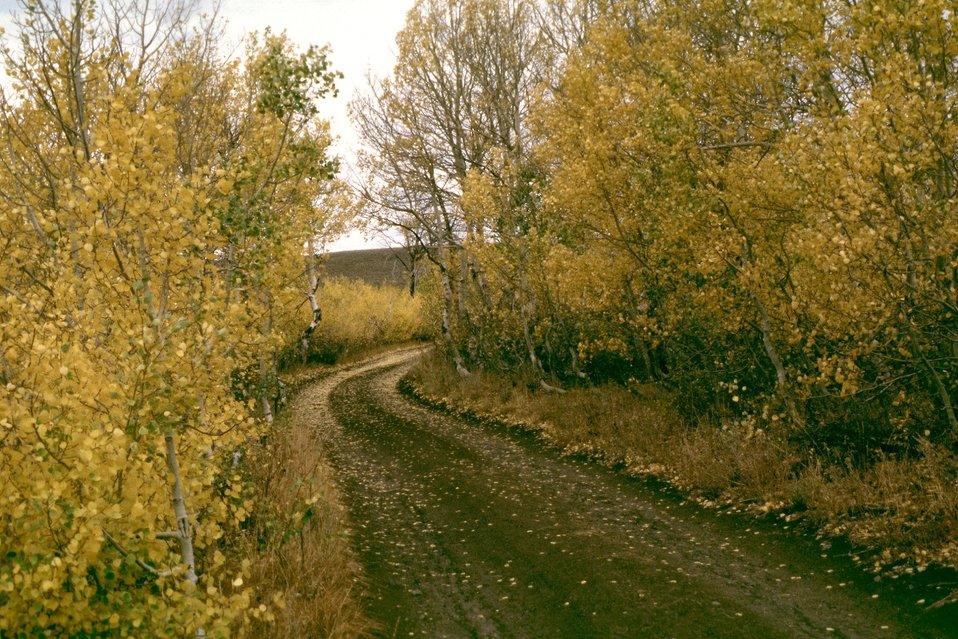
Road to State Cabin at Fish Lake Campground, Steen's Mountain.